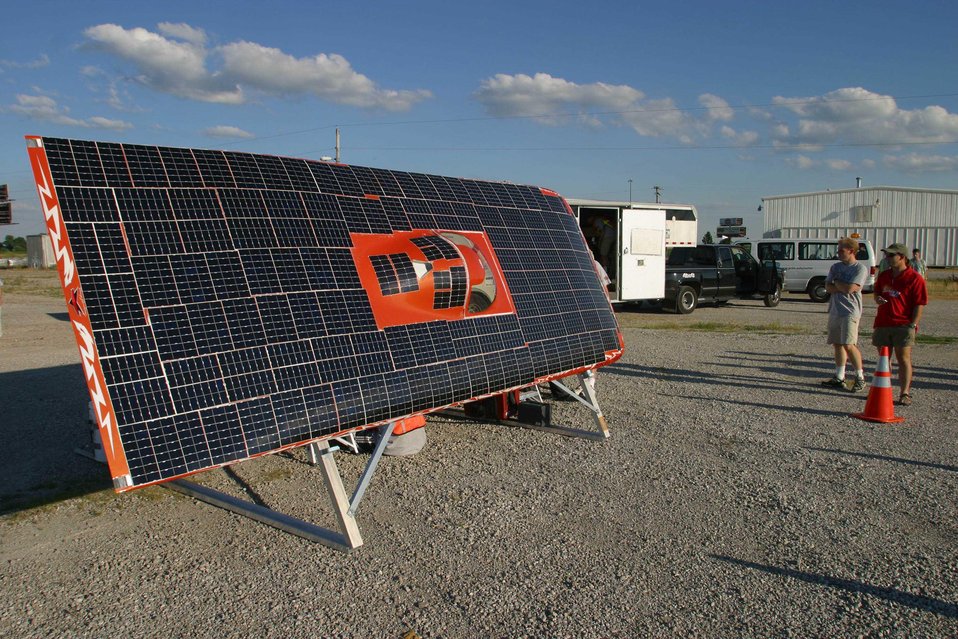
THE SOLAR CAR FROM PRINCIPAL COLLEGE IN ELSAH, ILLINOIS PROPPED UP FOR THE NIGHT.

THE AMERICAN SOLAR CHALLENGE, THE LONGEST SOLAR CAR RACE IN THE WORLD, IS A DOE SPONSORED EDUCATIONAL EVENT IN WHICH TEAMS COMPETE TO BUILD AND RACE SOLAR-POWERED CARS. TWENTY UNIVERSITIES PARTICIPATED IN THIS YEAR'S EVENT WHICH STARTED IN CHICAGO, ILLINOIS ON JULY 13 AND FOLLOWED ROUTE 66 FOR 2300 MILES TO CLAREMONT, CALIFORNIA, ENDING ON JULY 23, 2003.